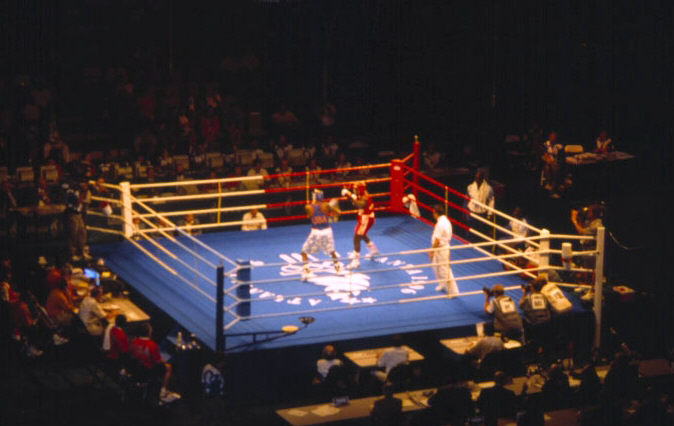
1996 Atlanta Olympics--boxing.